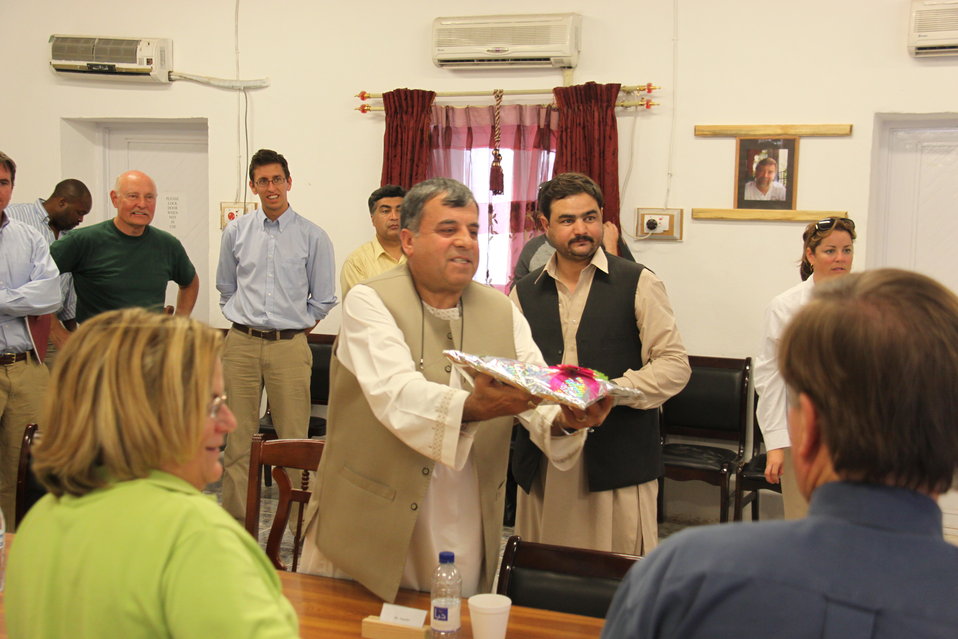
Meeting with Local Leaders in Kandahar